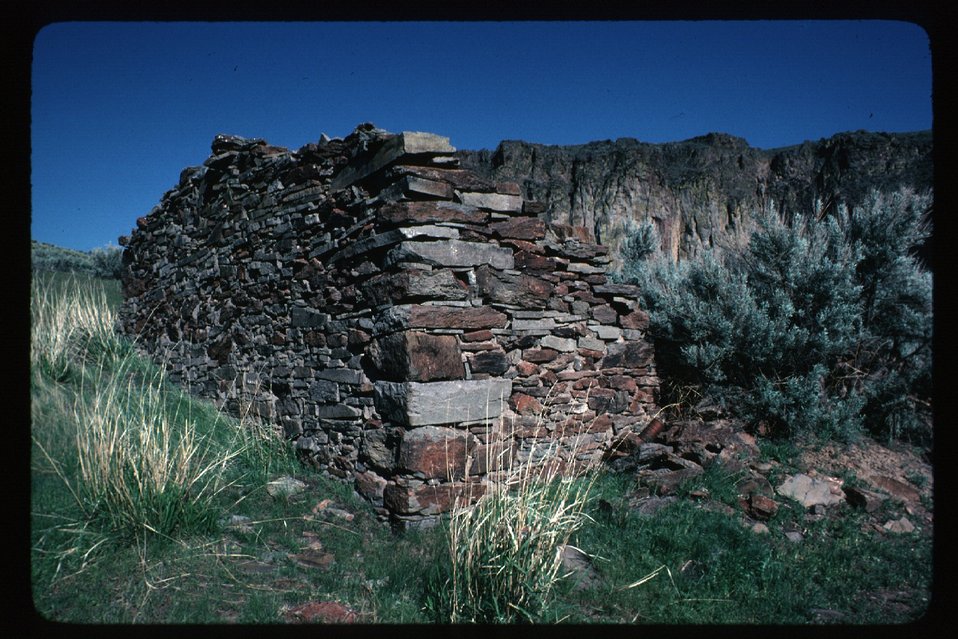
East Fork Owyhee one mile east of Battle Creek Archeology LSRD Lower Snake River District